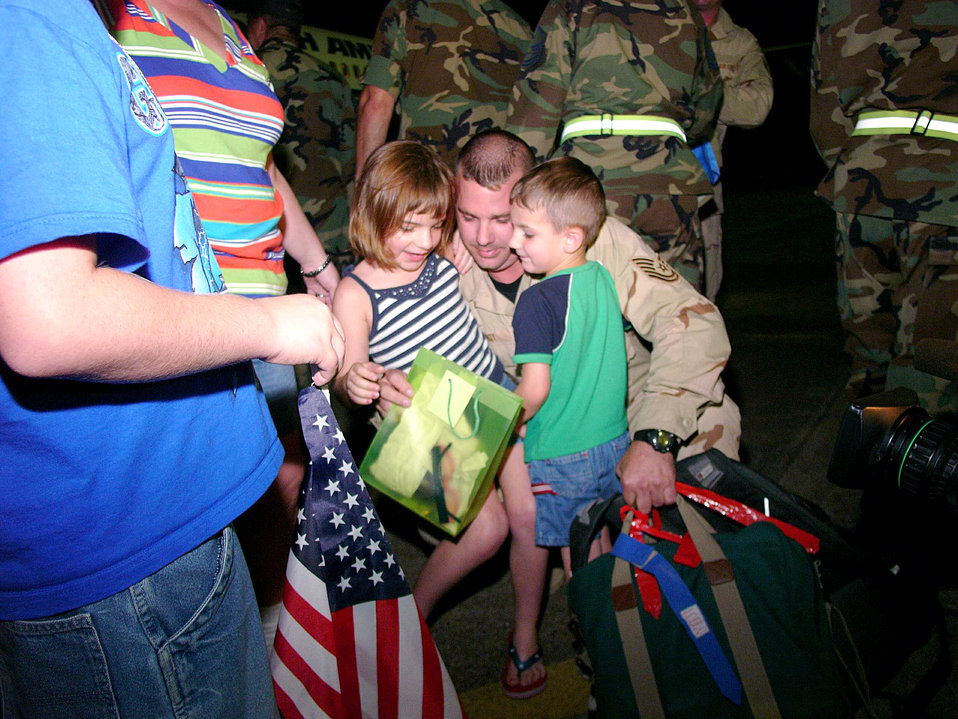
It's good to be home

ELLINGTON FIELD, Texas -- Tech. Sgt. W.T. Roy hugs his 7-year-old daughter, Mallori, and 3-year-old son, Branson, after returning from a deployment with the 147th Fighter Wing to Balad Air Base, Iraq. Many of the Airmen's families were there to meet them despite being evacuated for Hurricane Rita.